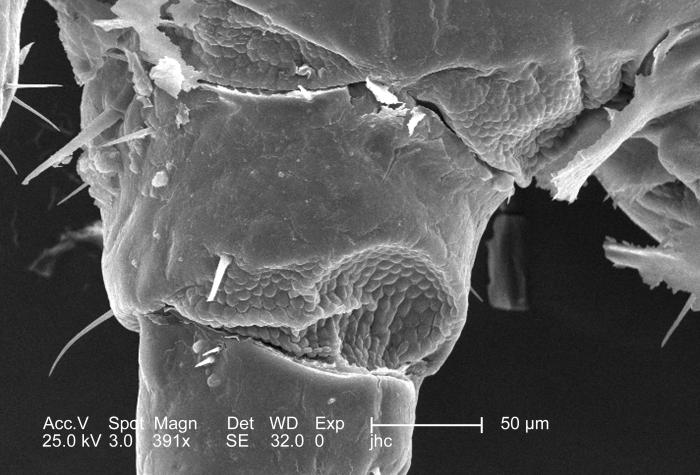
At a moderate magnification of 391x, this 2006 scanning electron micrograph (SEM) depicted an enlarged dorsal view at the proximal end of the left foreleg of a male body louse, Pediculus humanus var. corporis. The entire leg is not visible, but what is visible, includes the coxa and the trochanter, or the first and second leg segments respectively. For a complete dorsal view of the louse's leg, see PHIL# 9228. The leg is composed of six segments: coxa, trochanter, femur, tibia, tarsus, and pretarsus or claw. In the case of the louse, the leg segments are very stout, and end in claws, which it used to firmly grasp clothing, or a host's hair shafts. Note how the exoskeletal covering appears to possess an added flexibility at the coxa-trochanteric joint.